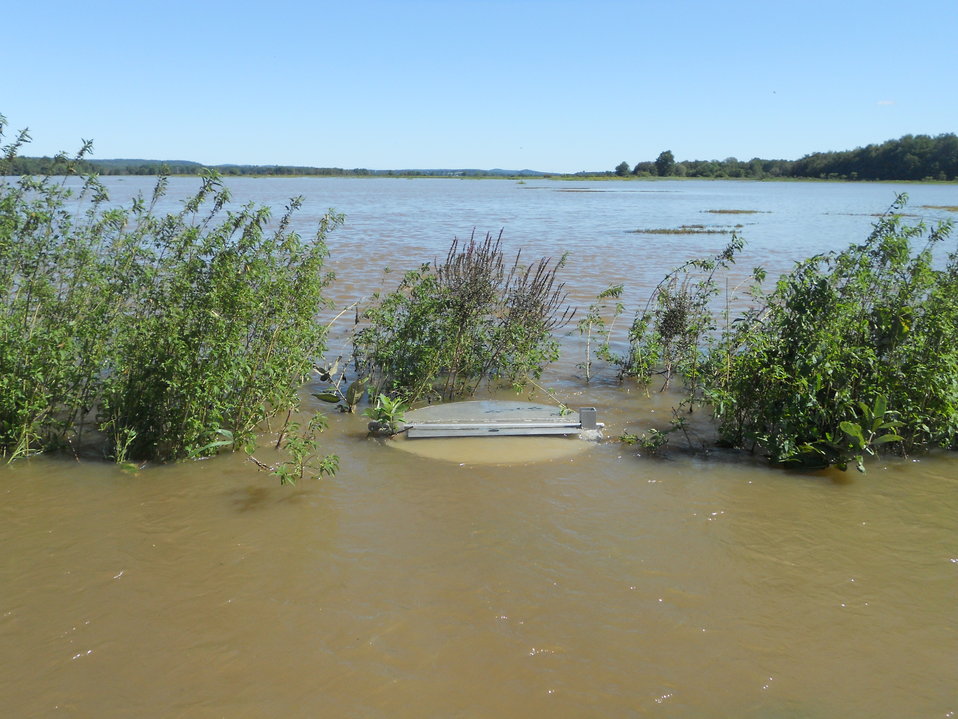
Hurricane Damage at Wallkill River National Wildlife Refuge August 30, 2011

Flooding at Liberty Loop Trail and impoundments, Sussex, NJ.